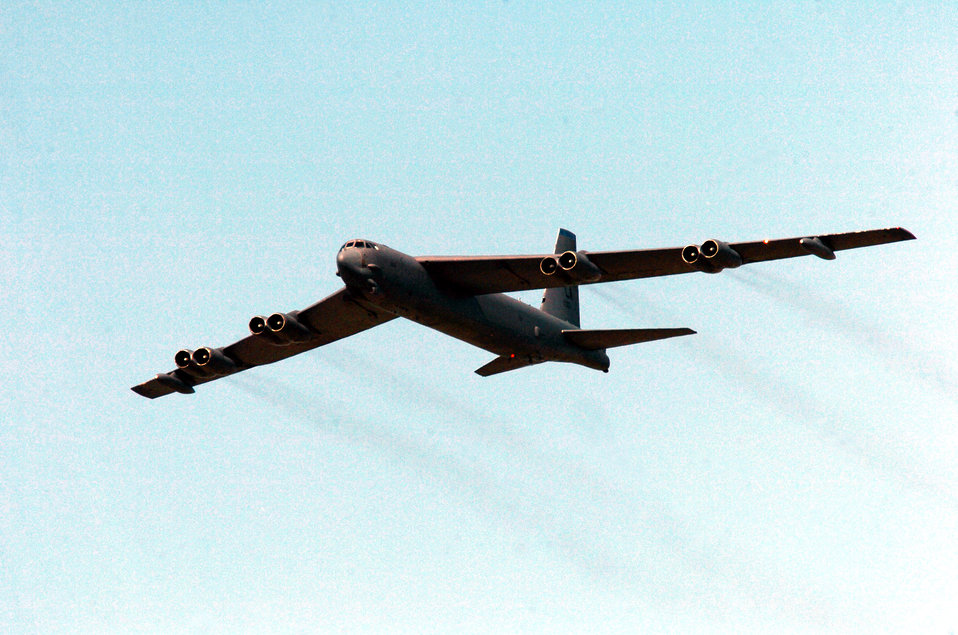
USAFE supports Royal International Air Tattoo

ROYAL AIR FORCE FAIRFORD, England -- A B-52 Stratofortress from Barksdale Air Force Base, La., flies during the 2005 Royal International Air Tattoo here July 17. More than 20 U.S. Air Force aircraft from bases worldwide took part in the two-day air show.